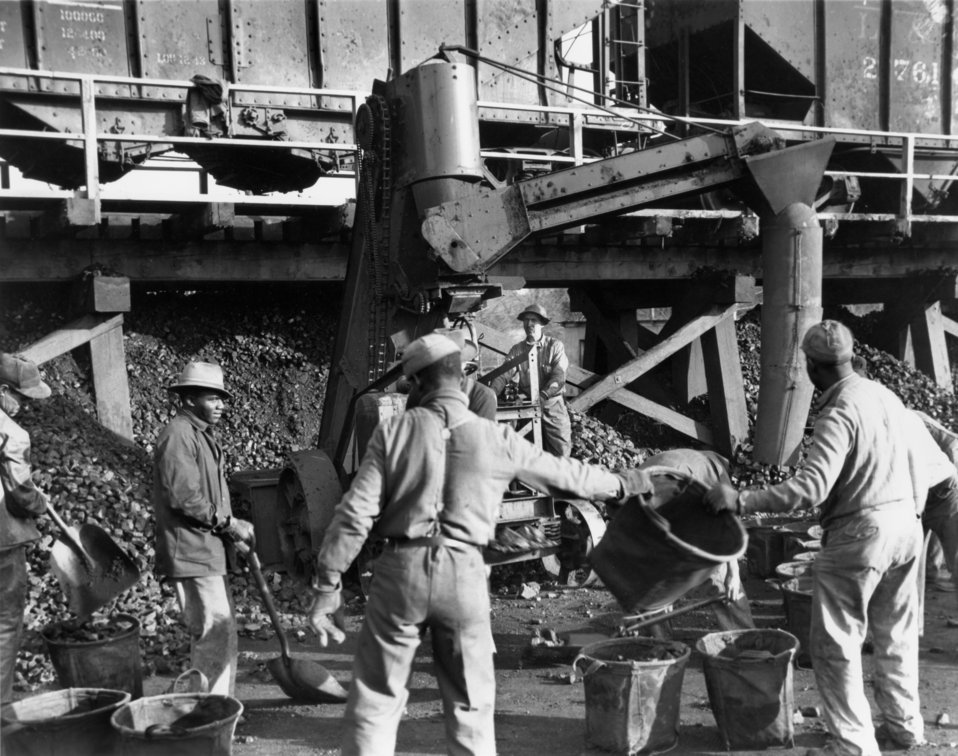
Coal Yard 1945 Oak Ridge

pro253 DOE photo Ed Westcott 1-13-1945 Oak Ridge Tennessee